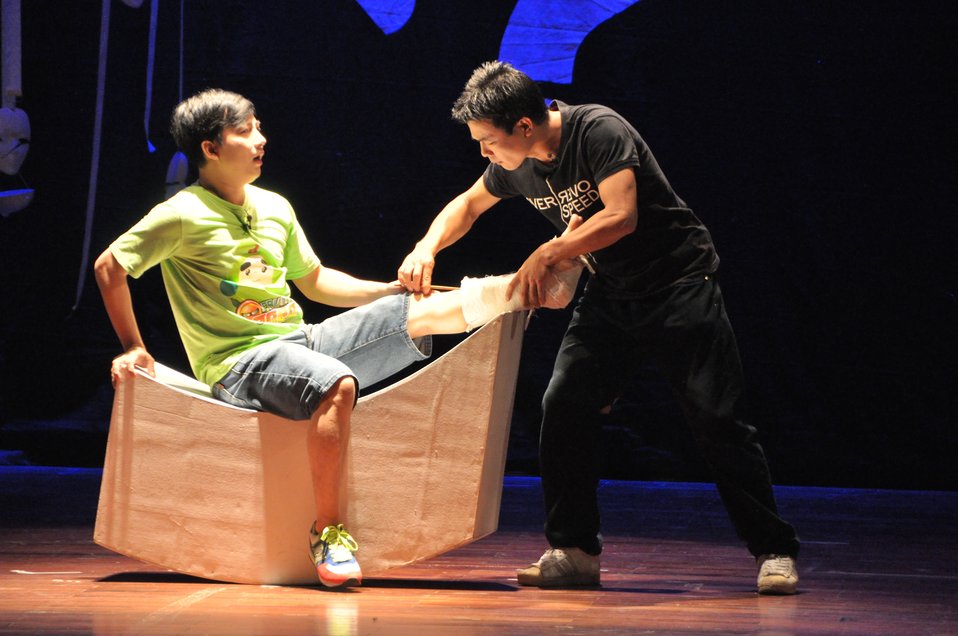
PEPFAR Musical Questions and Exclamations

Hanoi, May 17, 2013